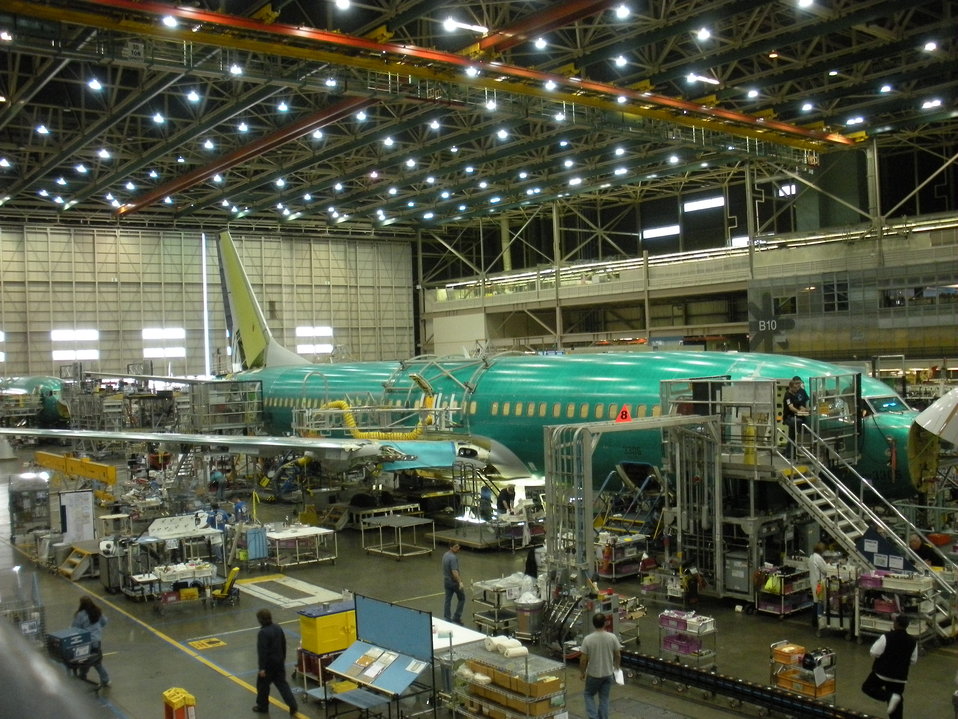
Boeing Plant in Renton, 5/18/2010

Secretary Geithner toured a Boeing 737 plant in Renton, WA on May 18, 2010.